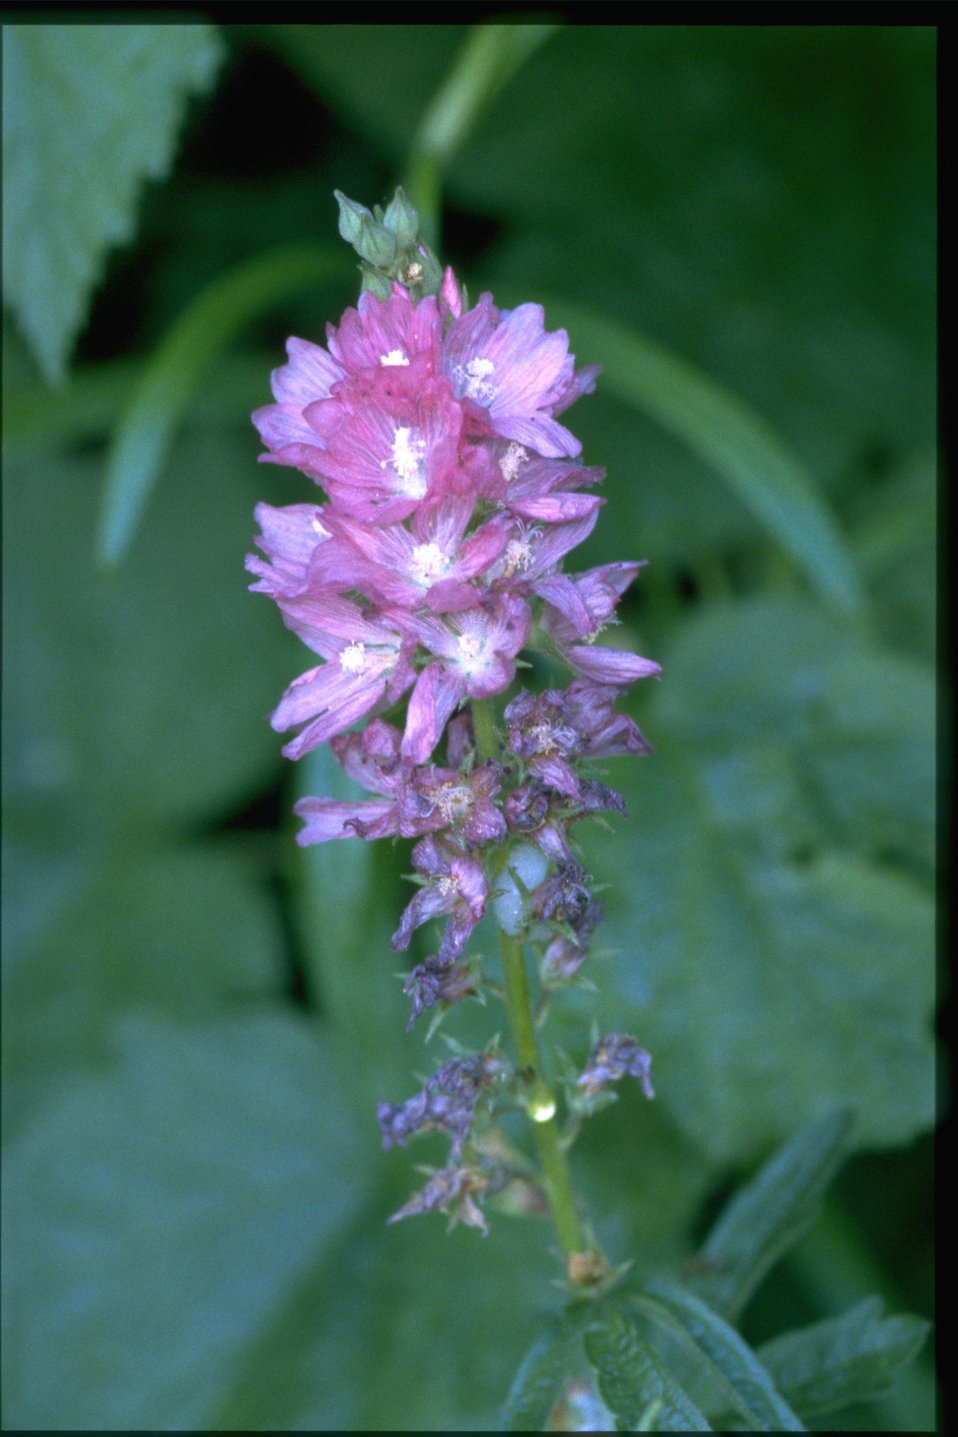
Medium shot of wildflower (genus Sidalcea).